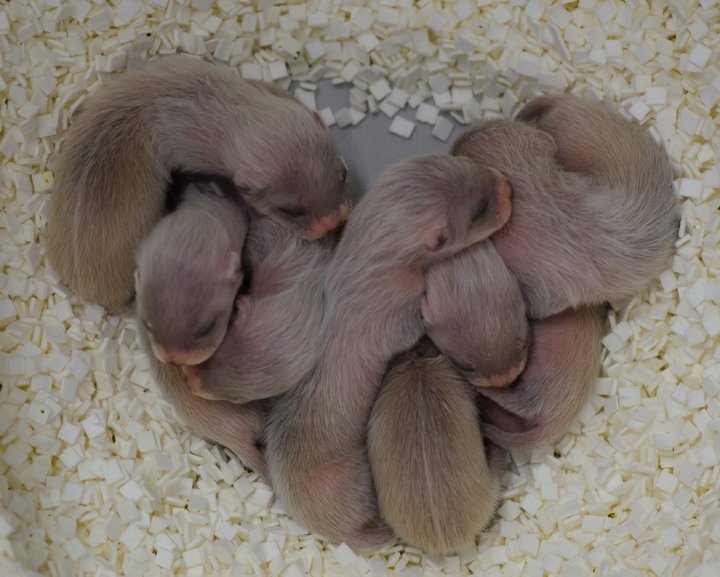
Ferret Heart

Credit: Kimberly Tamkun / USFWS

Photo Contest Entry #195